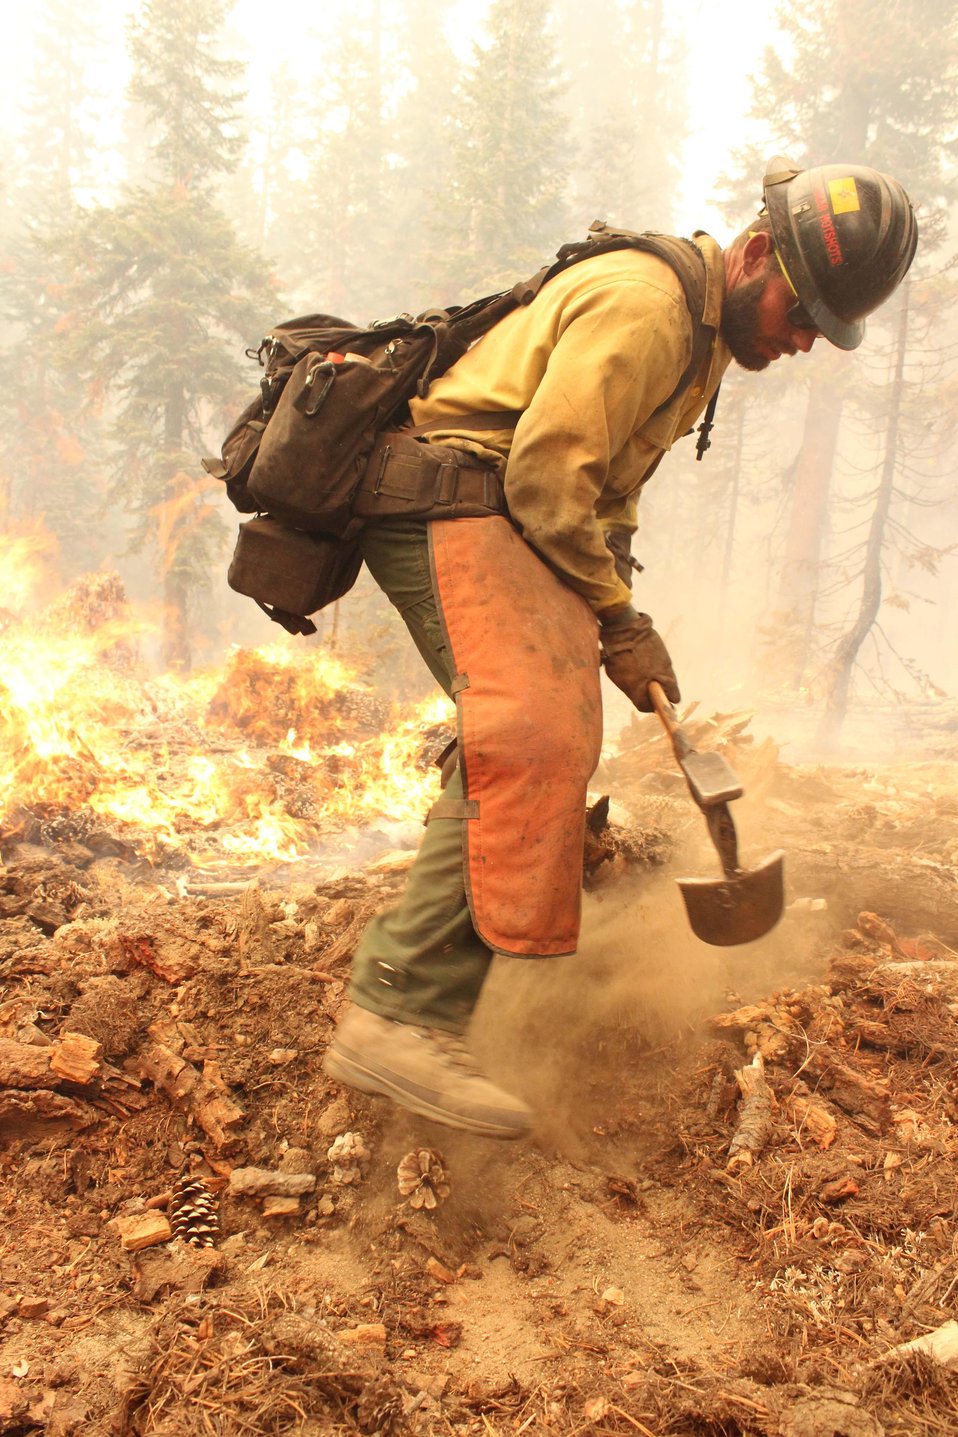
Smokey Bear hotshot firefighter digs a fire line at the Rim Fire. The Rim Fire in the Stanislaus National Forest near in California began on Aug. 17, 2013 and is under investigation. The fire has consumed approximately 256,169 acres and is 84% contained.